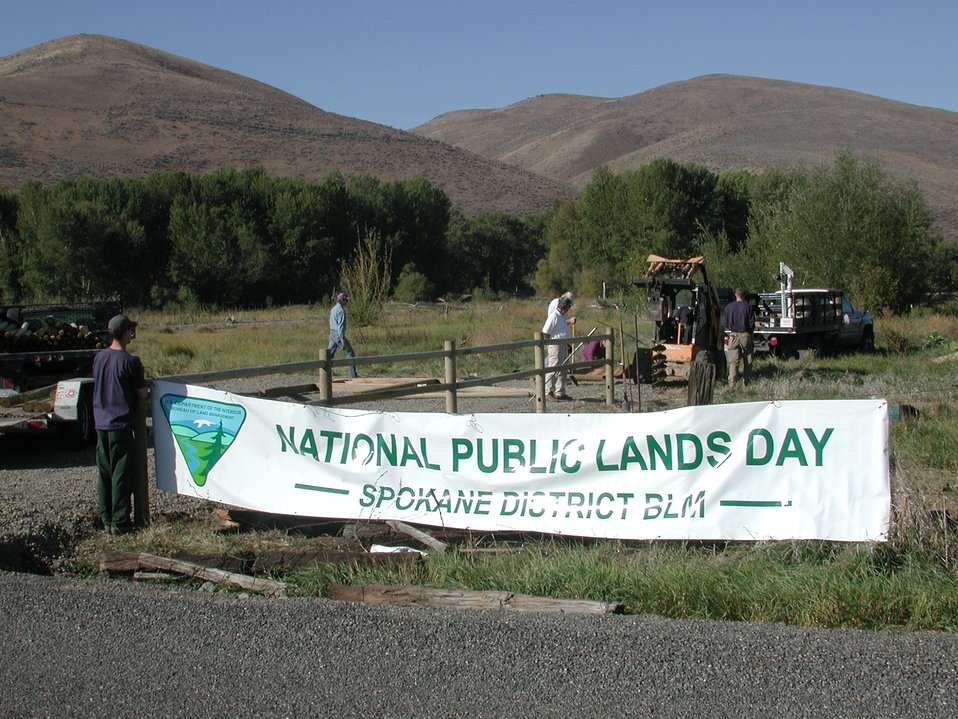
Wenatchee Field Office's Nationa Public Lands Day where volunteers built a wooden fence, installed vehicle barriers, and consturcted an information kiosk.